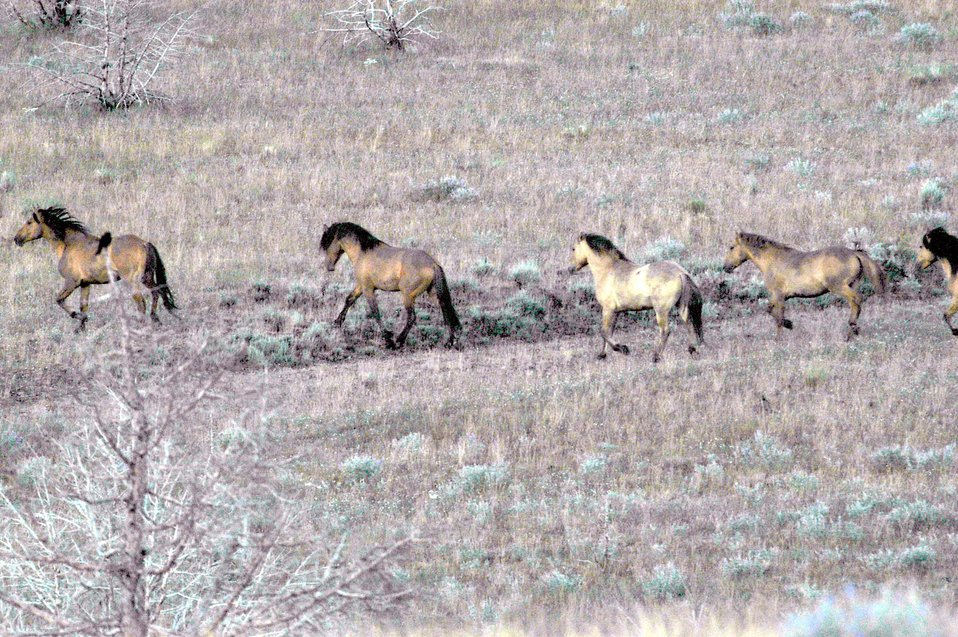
Kiger horses roam the plateaus of the Kiger Wildhorse Herd Management Area near Steens Mountain in Southeastern Oregon.